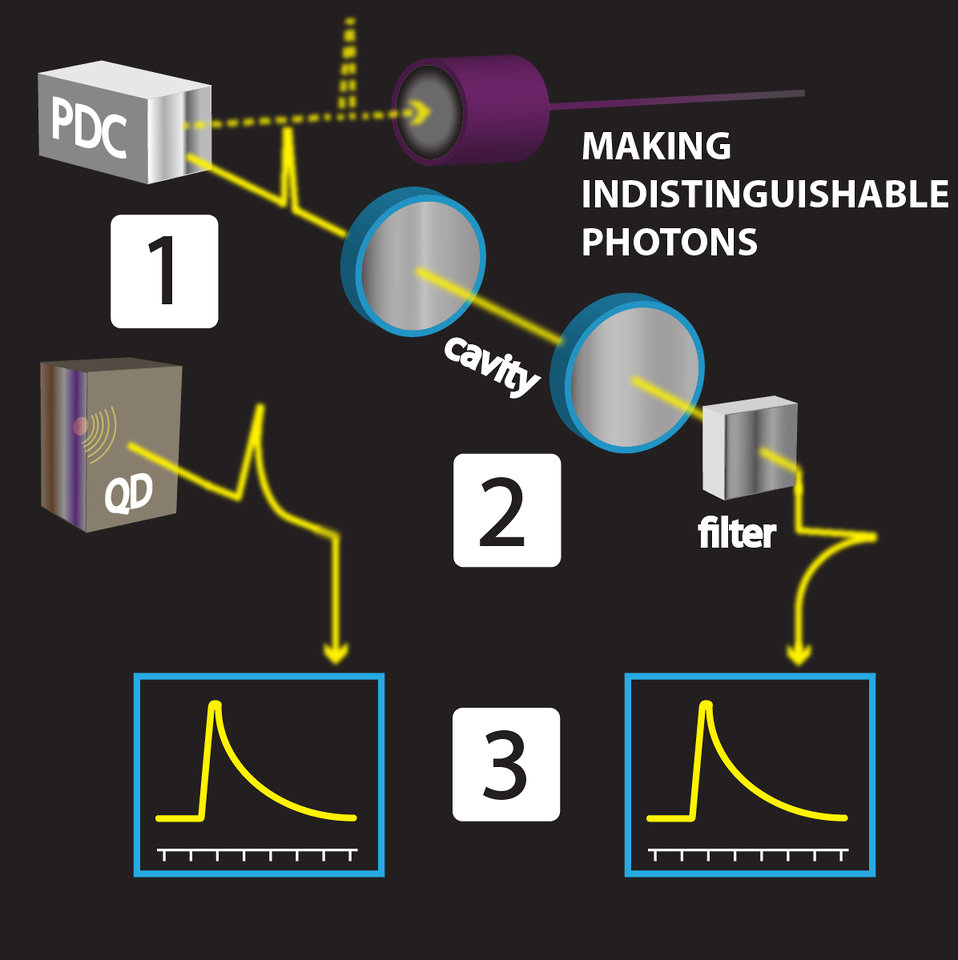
Photos; Quantum Dots

[1] A single photon is produced by a quantum dot (QD). Simultaneously, a pair of photons is produced by a parametric down-conversion crystal (PDC). [2] One of the PDC photons which has different characteristics than the QD photon is routed into a cavity and filter, [3] rendering this PDC photon and the QD photon nearly identical.